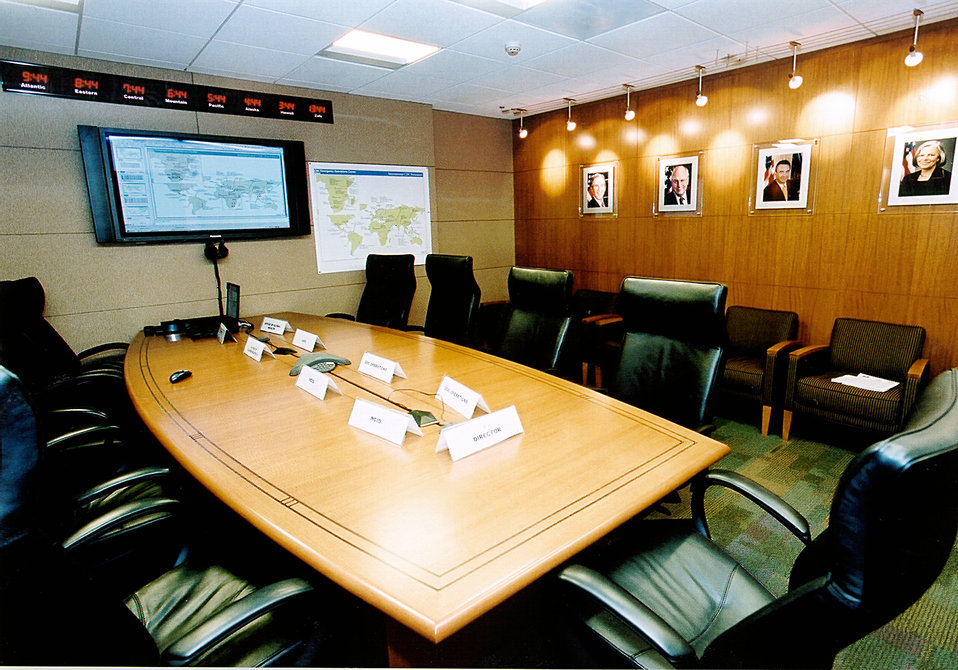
This is a photograph of the executive briefing room of the CDC's new Emergency Operations Center (EOC).